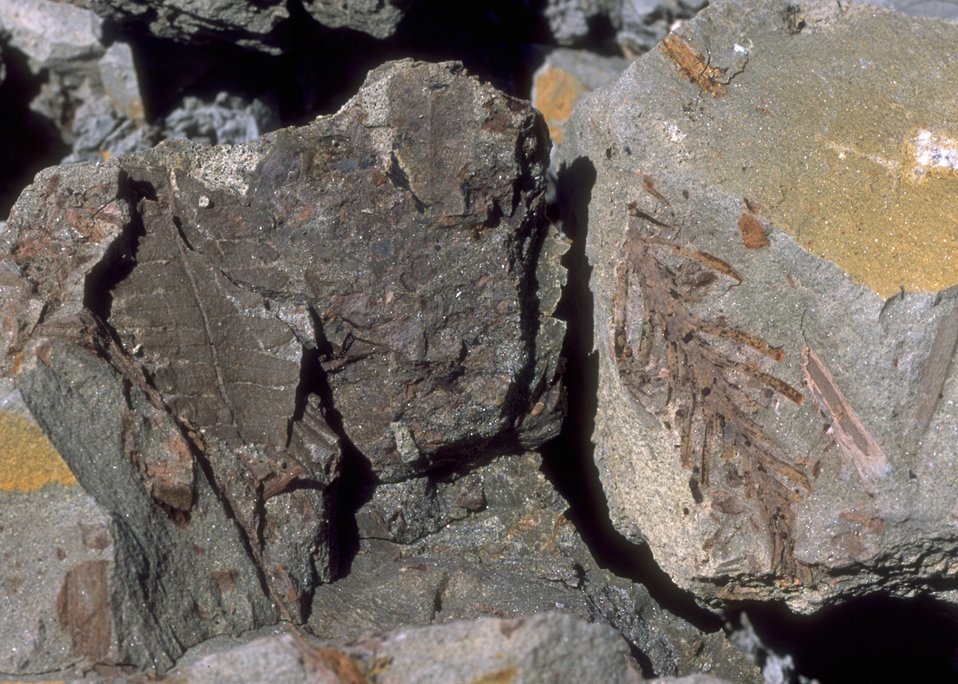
Close up of fossil vegetation, Cedar Ridge Paleo area, Worland Field Office.